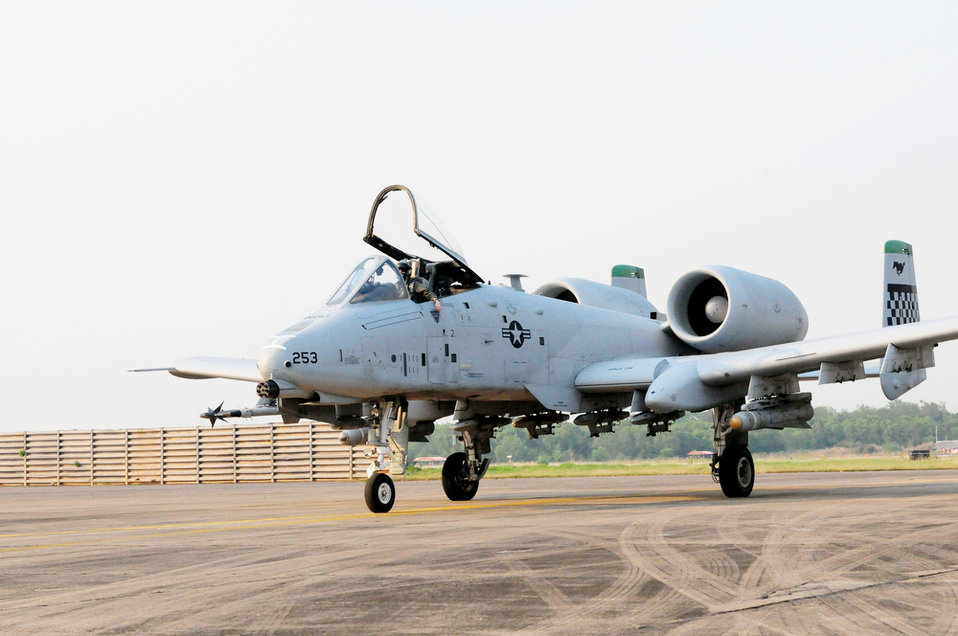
'Warthogs' at Cope Tiger

An A-10 Thunderbolt II from Osan Air Base, South Korea, returns from a Cope Tiger 2010 training mission March 5, 2010, at Udon Thani Royal Thai Air Force Base, Thailand. Cope Tiger is an annual, multilateral aerial large force exercise conducted in Thailand that includes humanitarian and civic assistance programs. This year's exercise takes place primarily at Udon Thani and Korat Royal Thai Air Force bases.